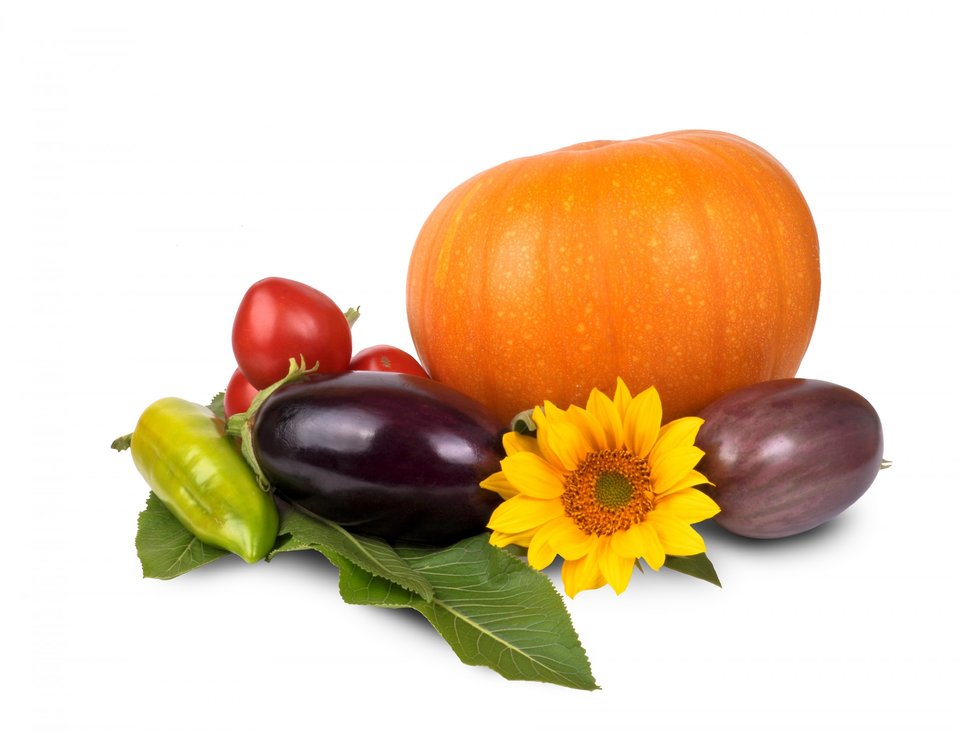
Set of vegetables on a white background.